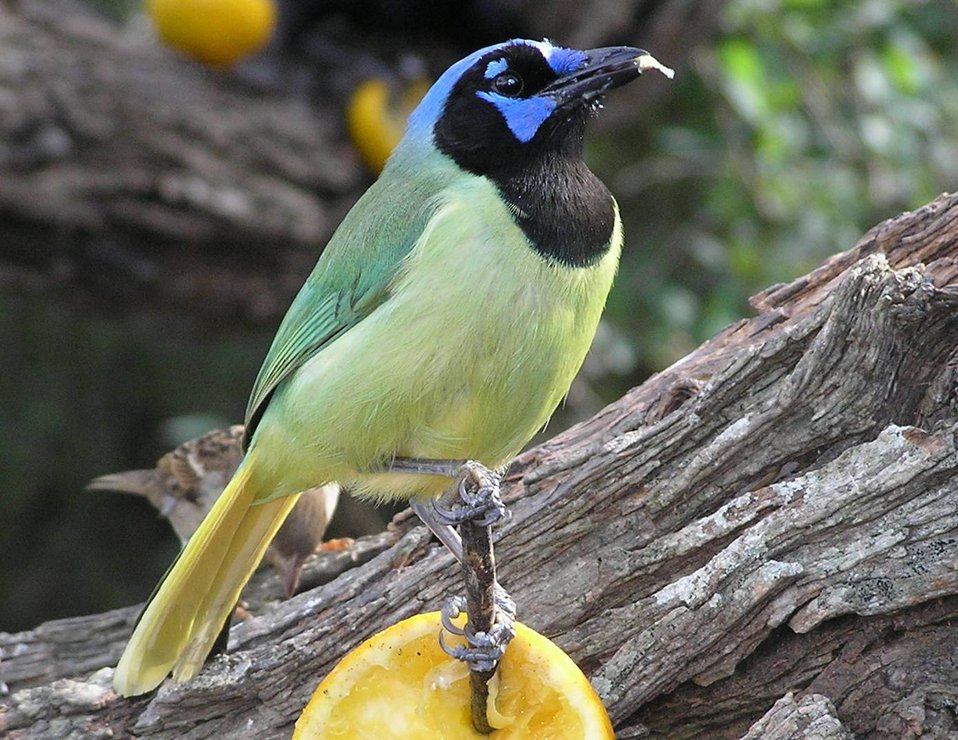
Green Jay, Laguna Atascosa National Wildlife Refuge

A Green Jay eating oranges at the bird feeding station outside the Laguna Atascosa NWR visitor center in Texas.